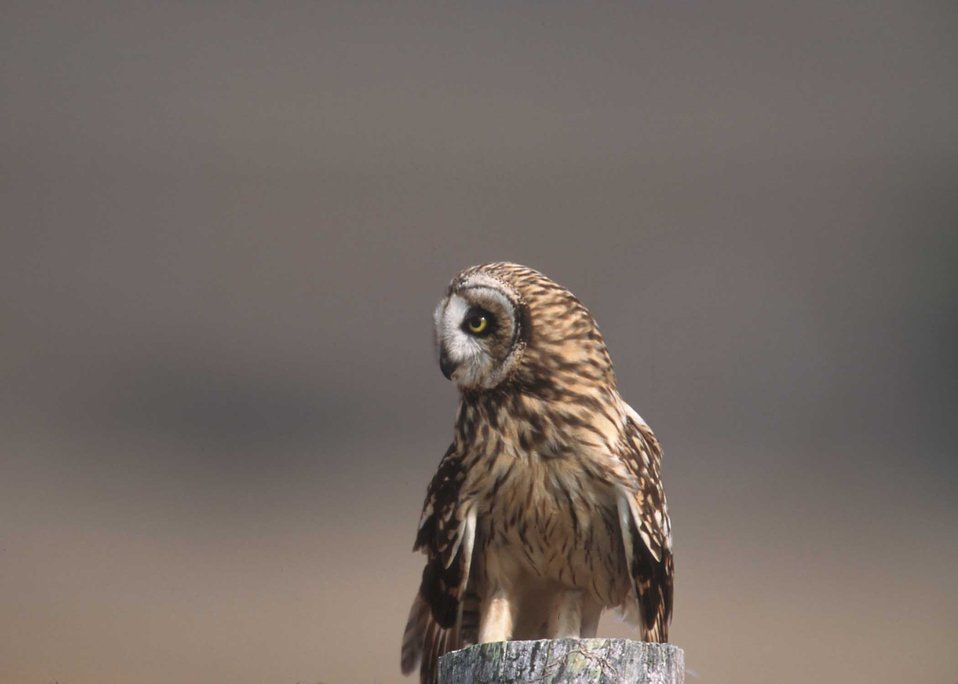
A short eared owl in Hawaii.